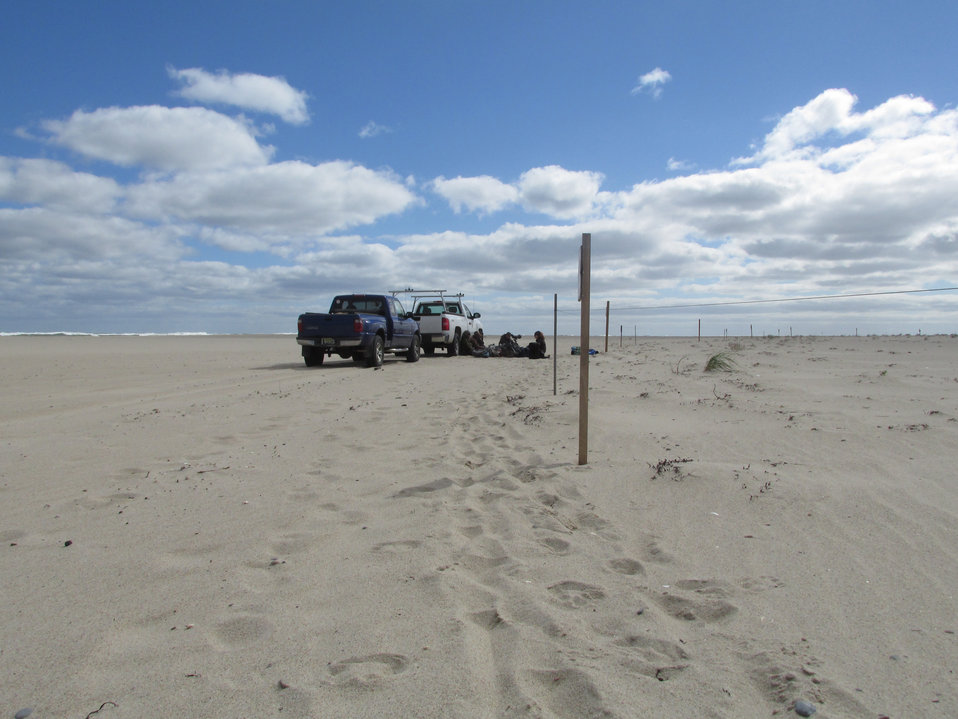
Red knot cannon netting in Cape Cod

Once the cannon net is set, most of the team hides out of site while waiting for the birds to fly in around high tide.